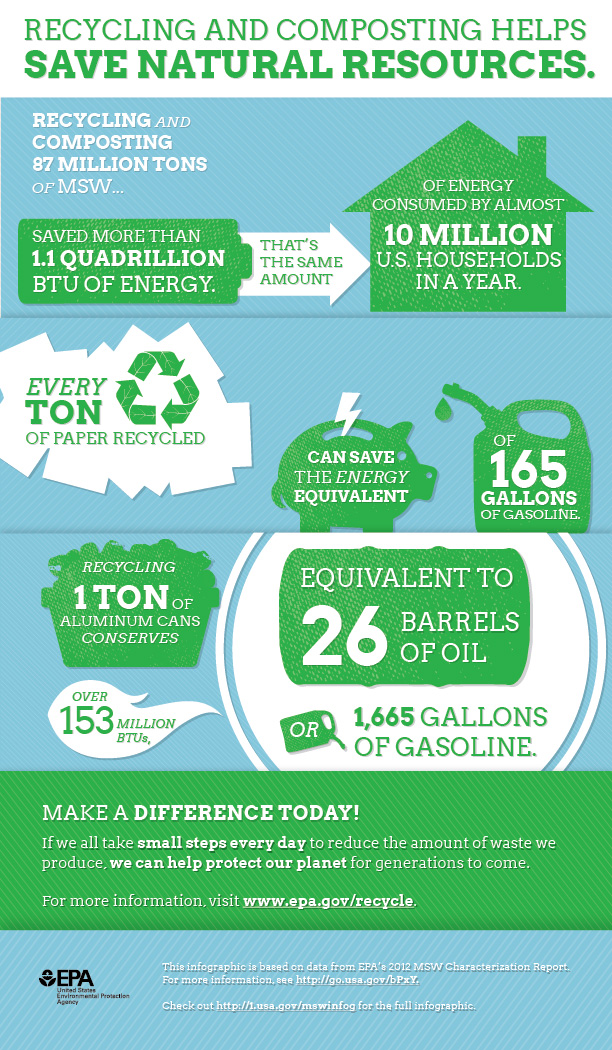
Recycling and Composting Helps Save Natural Resources

Everything we use has a life cycle, and each stage has environmental impacts and consumes energy. Recycling generally uses less energy than extracting and processing raw materials.

- Full infographic: go.usa.gov/bPcA
- Calculate your own energy savings from recycling: www.epa.gov/iwarm
- 2012 Municipal Solid Waste Characterization Report: go.usa.gov/bPxY